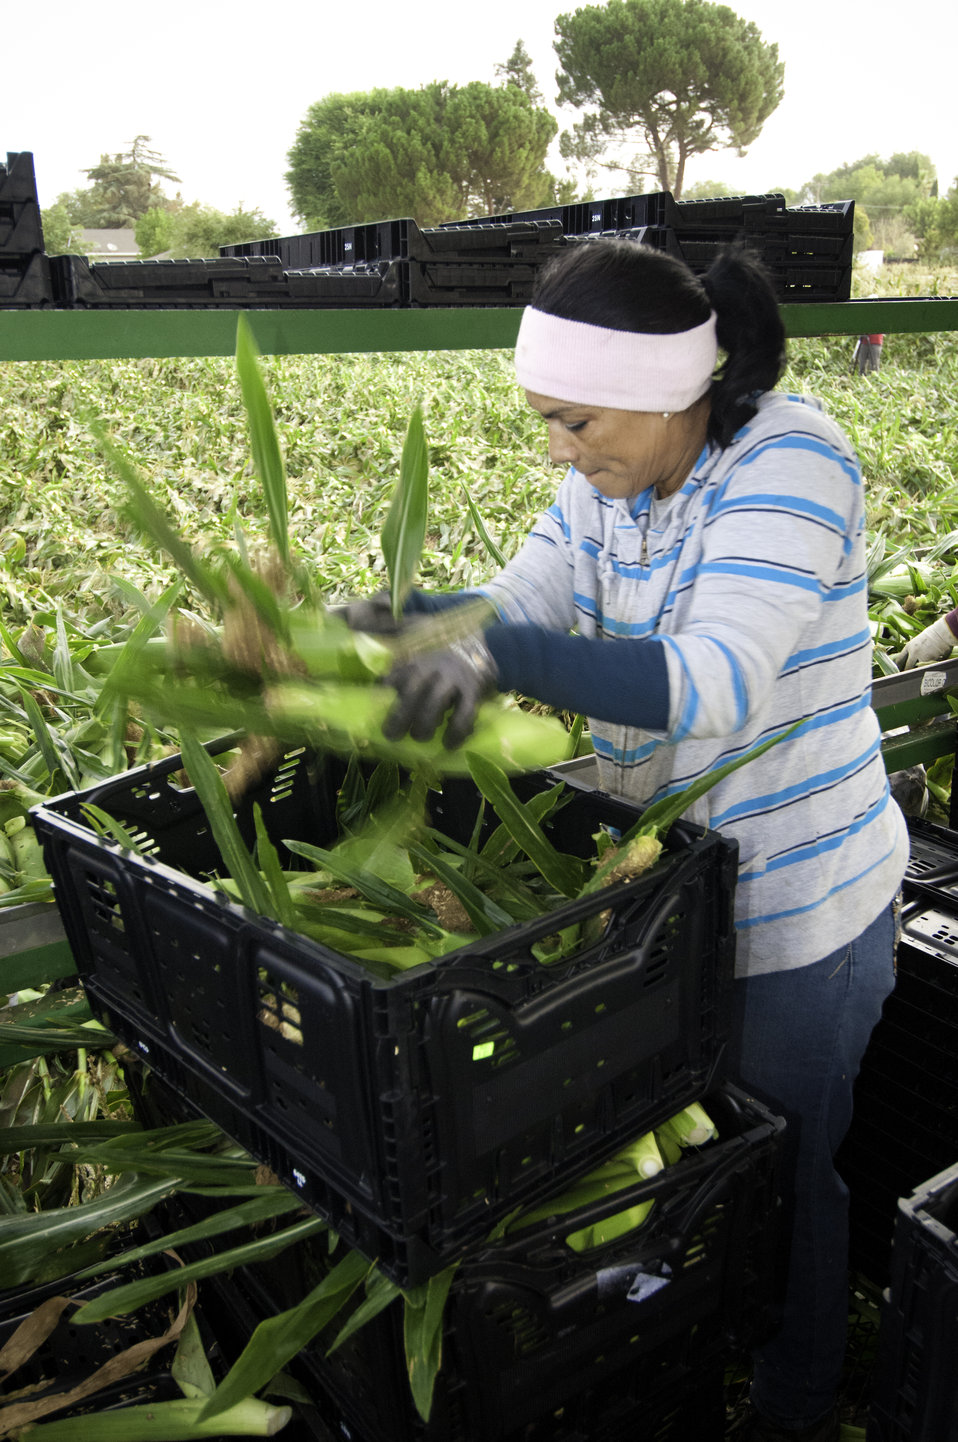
Migrant workers harvest corn on Uesugi Farms in Gilroy, CA on Wednesday, Aug. 28, 2013.